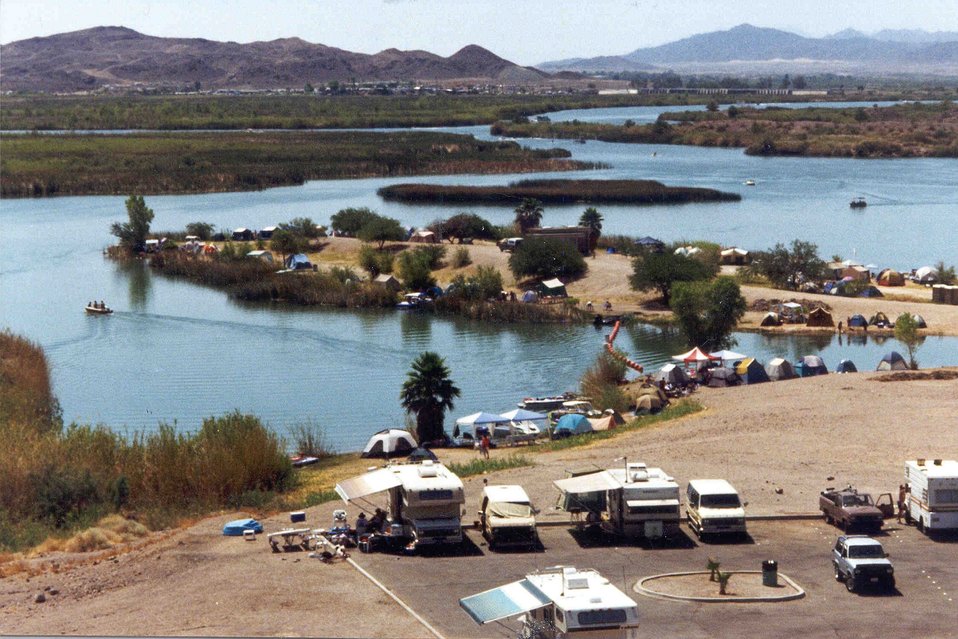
Recreation at its finest at Squaw Lake